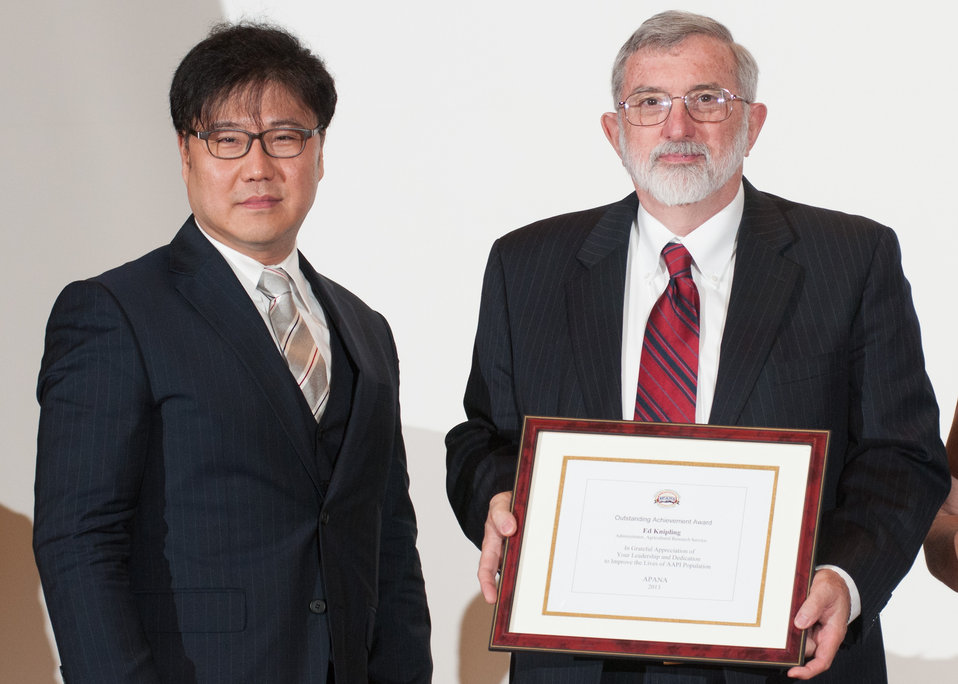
Asian Pacific American Network in Agriculture (APANA) President Justin Rhee, left, presents an “Outstanding Achievement Award” for leadership and dedication to improve the lives of the Asian Americans and Pacific Islander (AAPI) population, to U.S. Department of Agriculture’s (USDA) Agricultural Research Service (ARS) Associate Administrator Dr. Caird Rexroad, Jr., who is accepting for ARS Administrator Dr. Edward Knipling, during the USDA Asian Pacific American Heritage Month Observance, at the USDA headquarters in Washington, D.C., on Thursday, May 23, 2013. ARS employees, with support of management, have mentored students and conducted outreach activities for the AAPI population. This year’s theme is “Building leadership; Embracing the Cultural Values and Inclusions.”